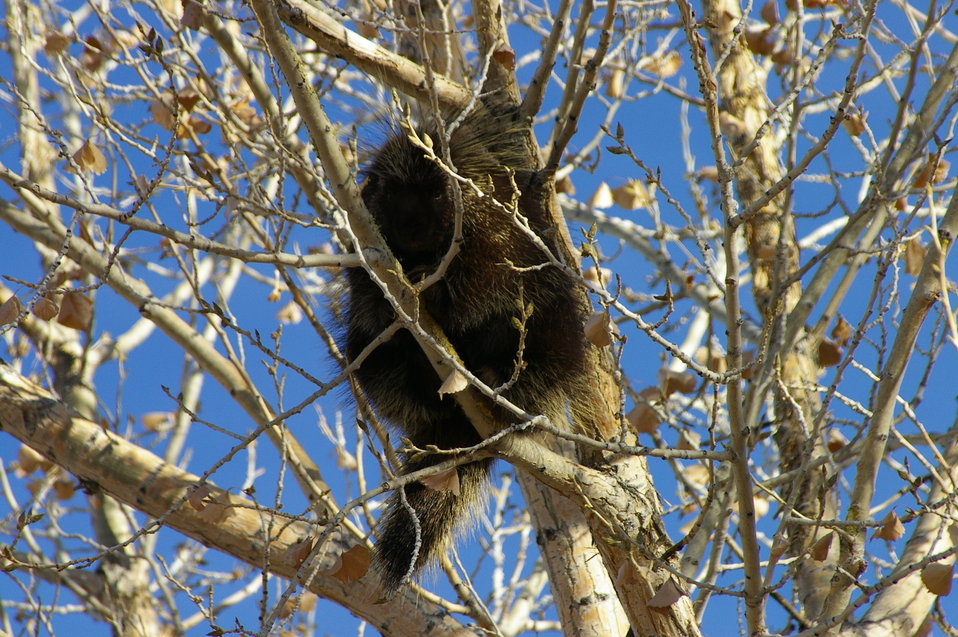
Porcupines

The leaves are gone but these spiny critters don't mind. Come to Ouray National Wildlife Refuge and check out the porcupines hanging around in the trees.